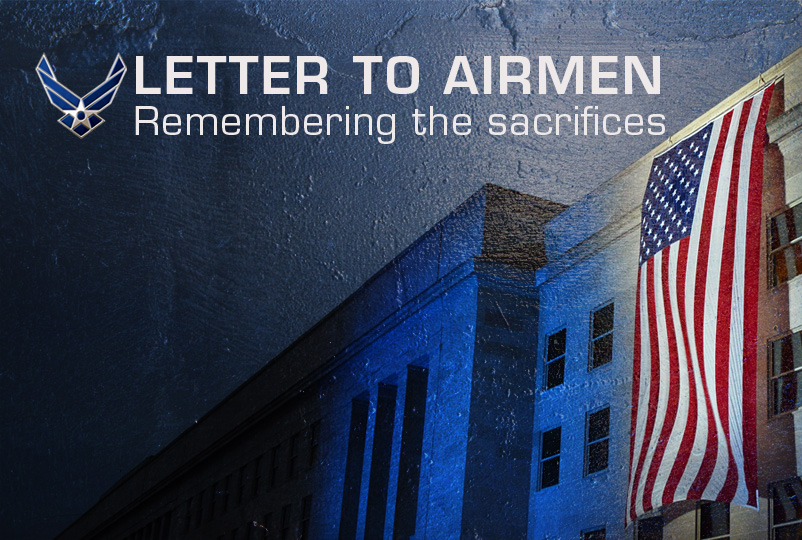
Air Force leaders issue Sept. 11 message